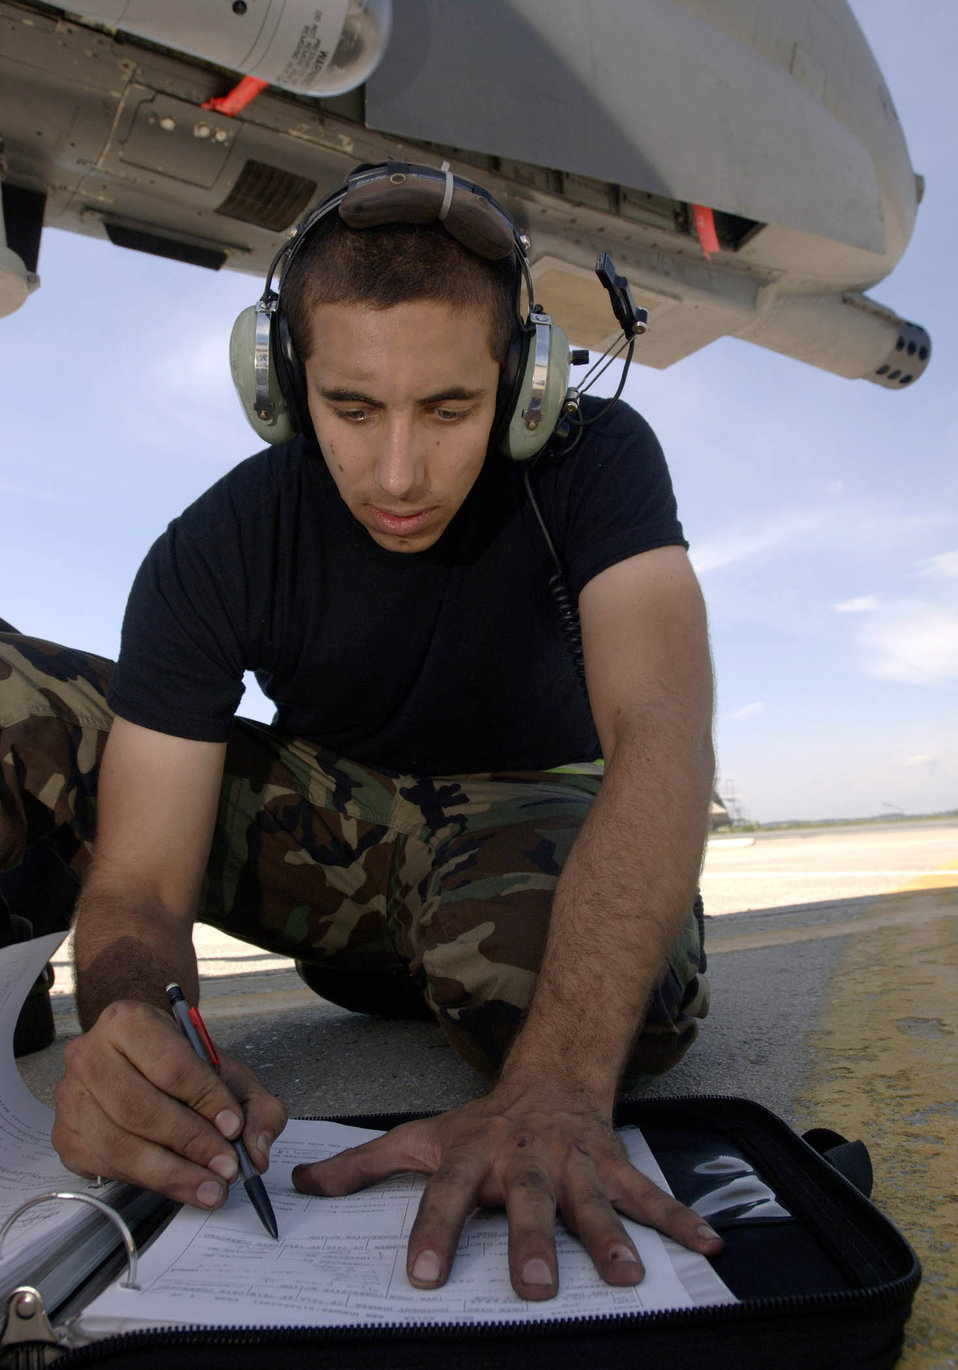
Waiting for the 'all clear'

SPANGDAHLEM AIR BASE, Germany -- Airman 1st Class Eric Gibson fills out forms while preparing an A-10 Thunderbolt II for its next sortie. He is a crew chief with the 81st Aircraft Maintenance Unit.